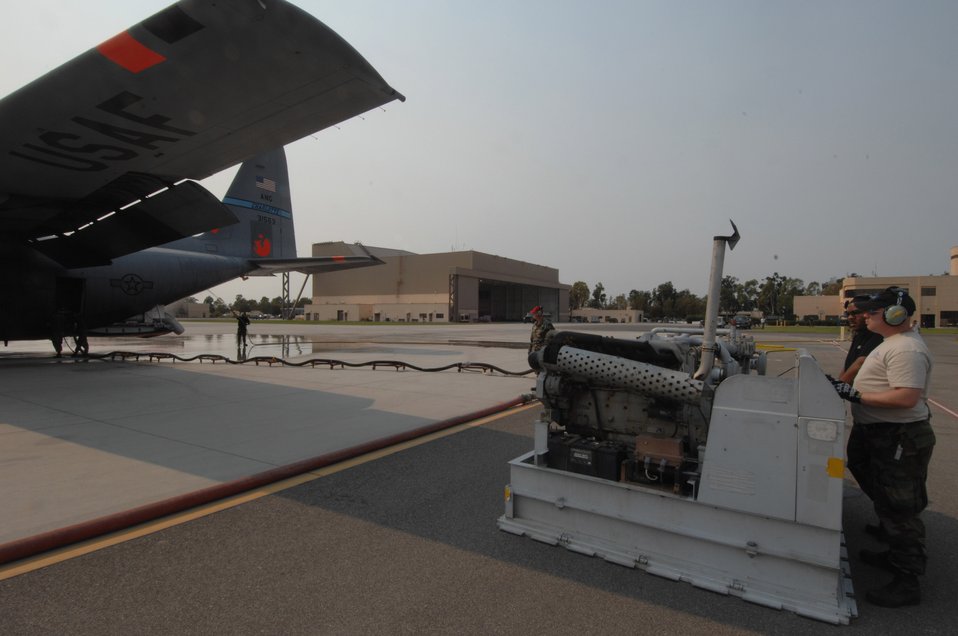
Guard, Reserve aid in California firefighting efforts

Tech. Sgt. David Weathers and Tech. Sgt. Shaun McCullough monitor the fire retardant levels of the Modular Air Fire Fighting System on a C-130 Hercules as it prepares to launch Oct. 25 from Channel Islands Air National Guard Base, Calif. Sergeants Weathers and McCullough are assigned the 145th Maintenance Squadron from Charlotte, N.C. Air Force Reserve Command and Air National Guard Airmen are participating in the Southern California firefighting effort. Sergeant Lefler is assigned to the 145th Maintenance Squadron from Charlotte, N.C.